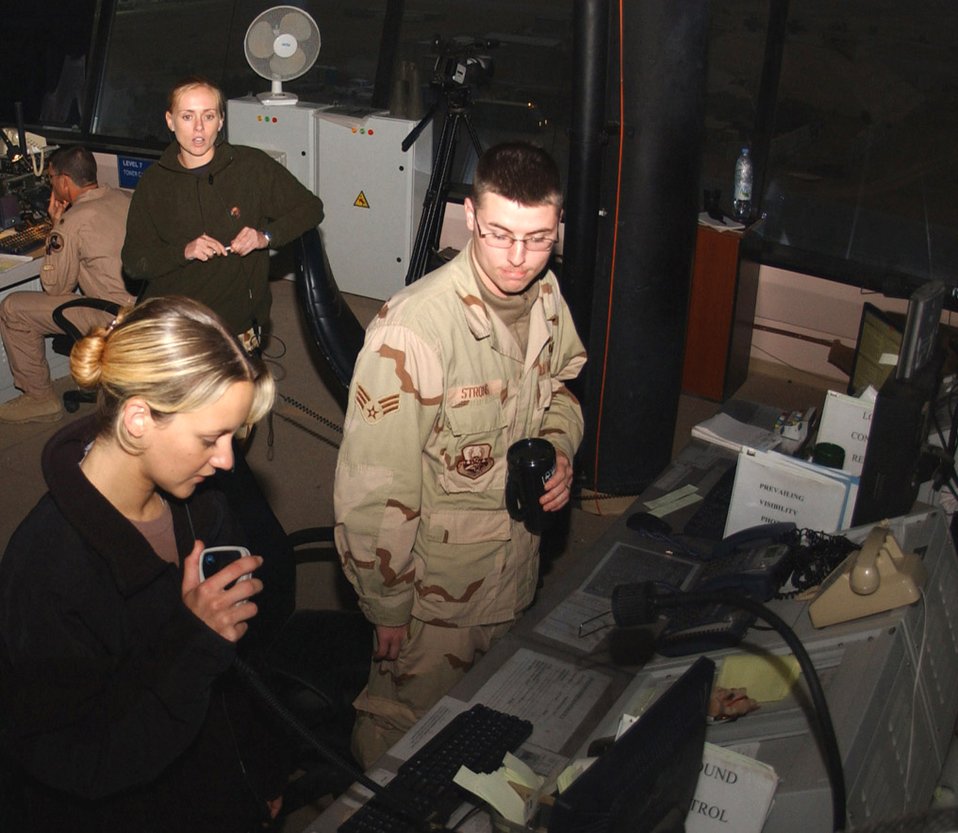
Operation Iraqi Freedom

BALAD AIR BASE, Iraq (AFPN) -- Airmen with the 332nd Expeditionary Operations Support Squadron monitor all air traffic coming into and out of Balad Air Base and Logistics Support Area -- Anaconda.